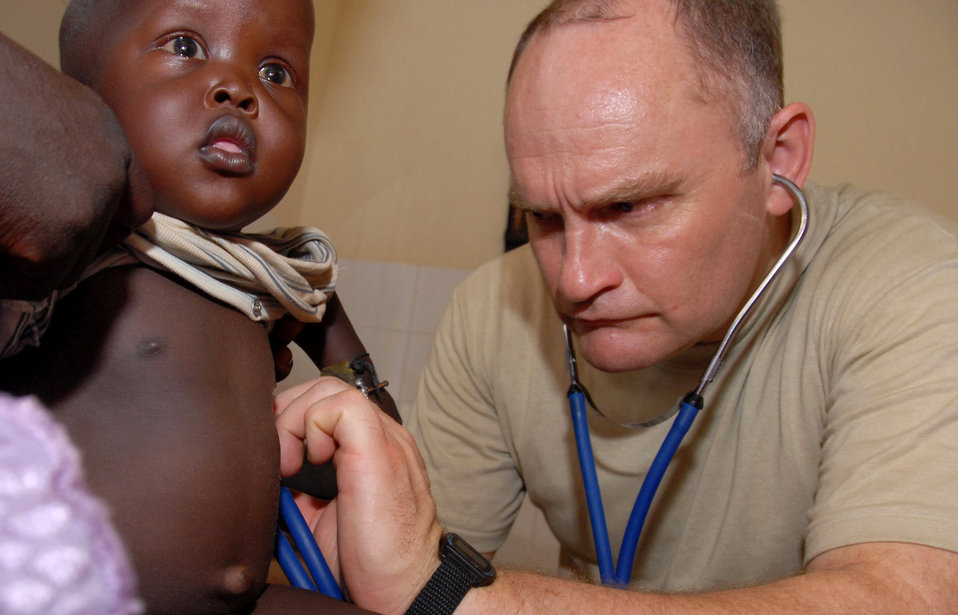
Medics bring relief to Senegal

Maj. (Dr.) Brandon Isaacs checks a Senegalese baby's lungs during a routine check up as part of Shared Accord 07 June 16 to 28 in Linguere, Senegal. Major Isaacs is an individual mobilization augmentee flight surgeon assigned to Ellsworth Air Force Base, S.D.